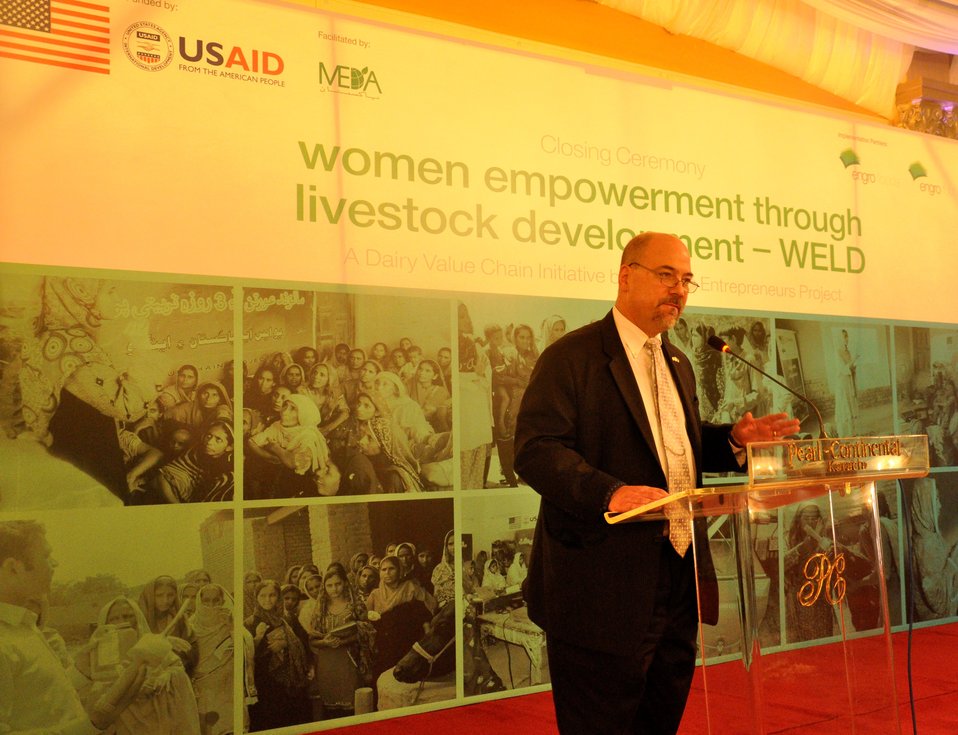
Successful completion of USAID’s Entrepreneurs Project - WELD

Mr. Leon S. Waskin, USAID’s Regional Director for Sindh, congratulated dairy farmers of Sindh and South Punjab on completion of Entrepreneurs Project